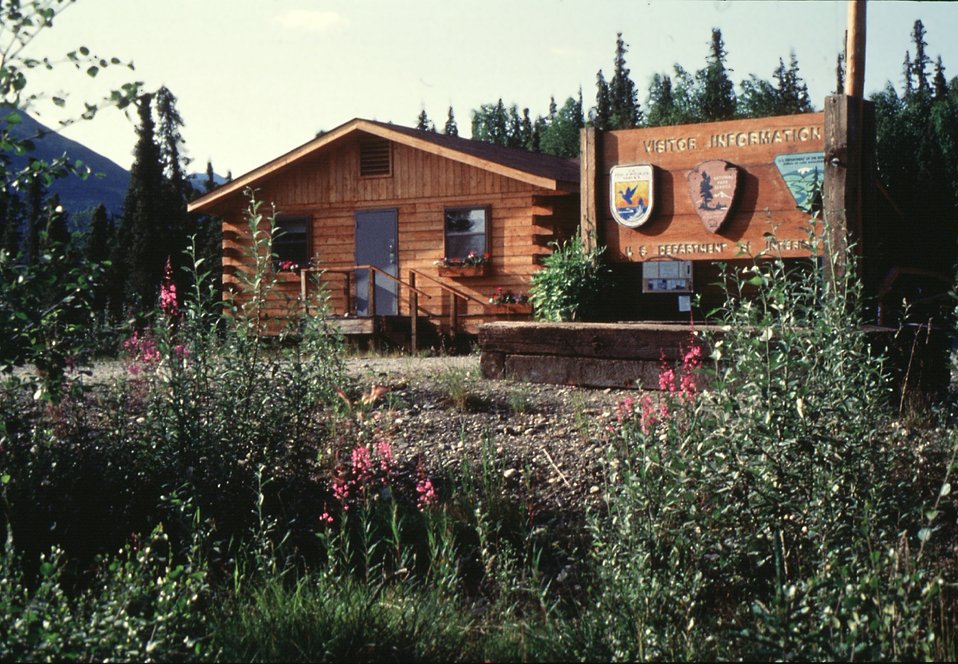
Coldfoot Visitor Center, Dalton Highway